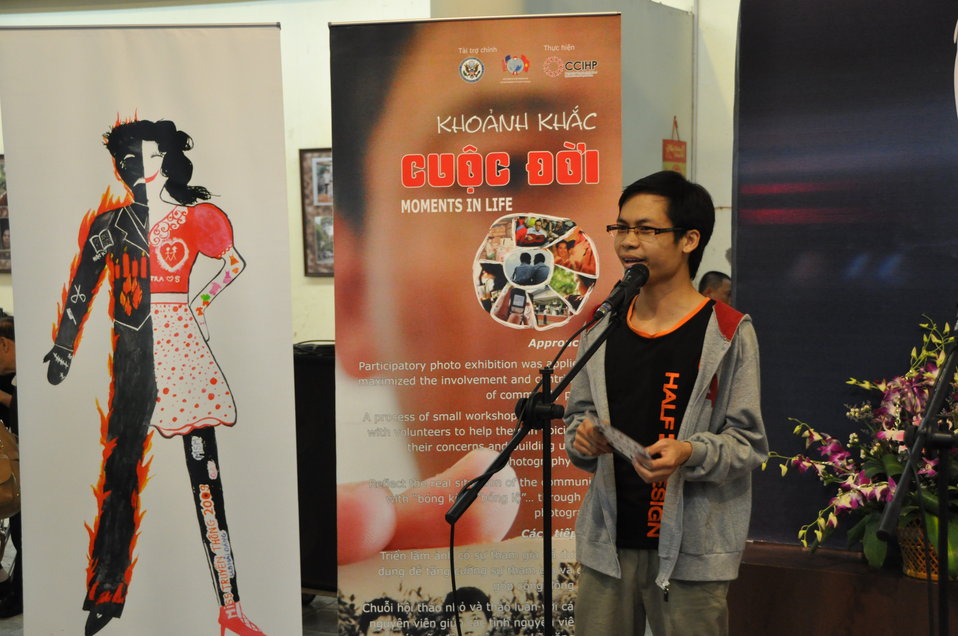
Moments in Life Exhibit: PEPFAR